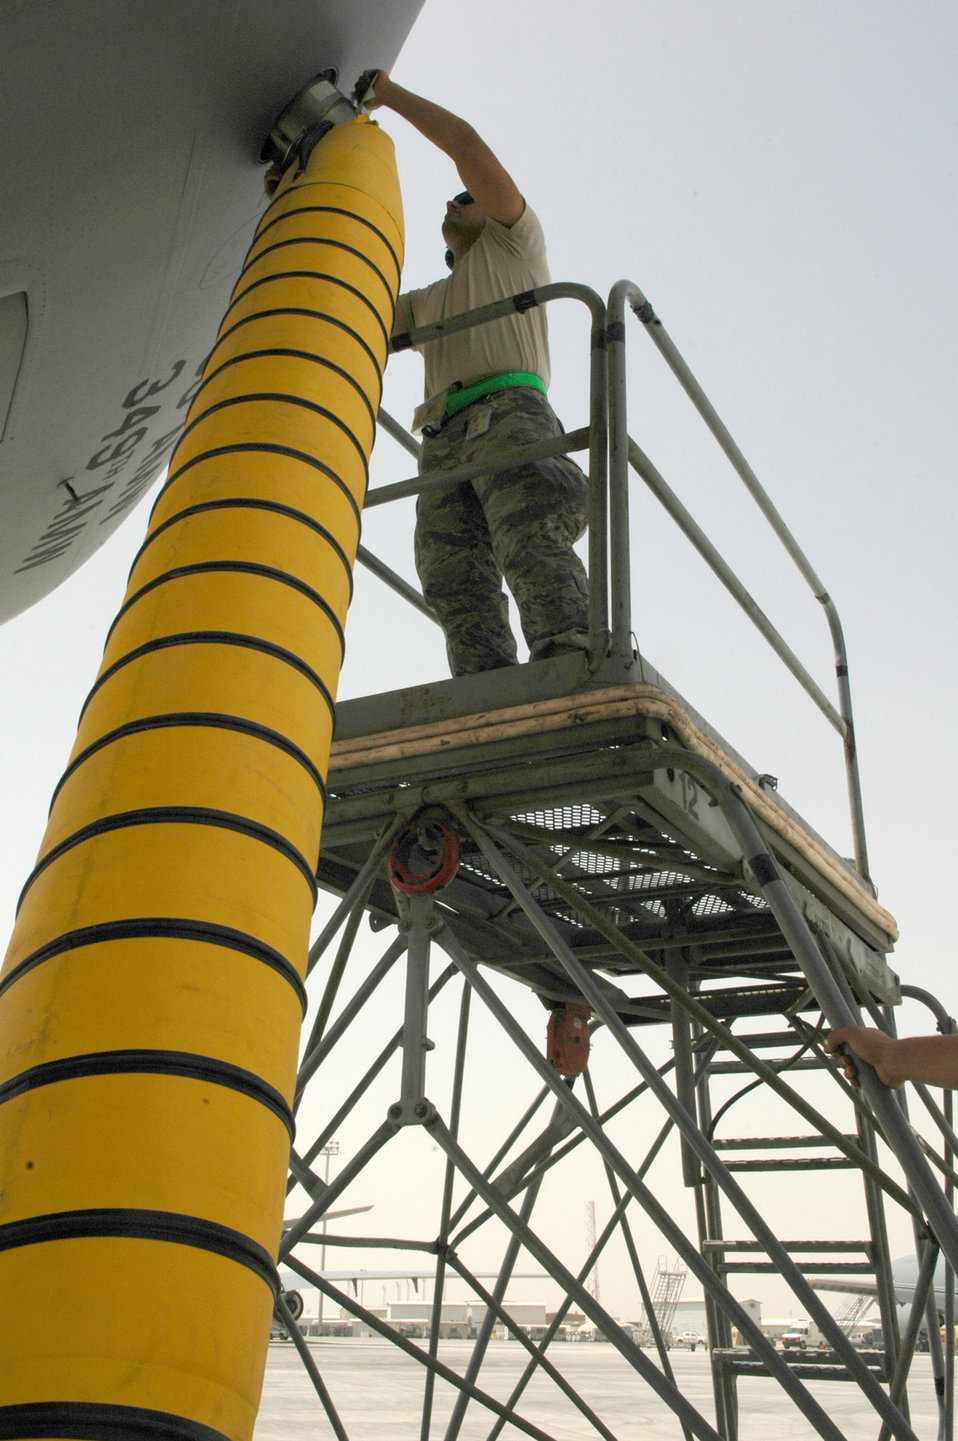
KC-10 in Southwest Asia

Airman 1st Class Matthew Haynes seals an air cart hose to the side of a KC-10 Extender May 18, 2011, in Southwest Asia. Airman Haynes is a crew chief assigned to the 380th Expeditionary Aircraft Maintenance Squadron.